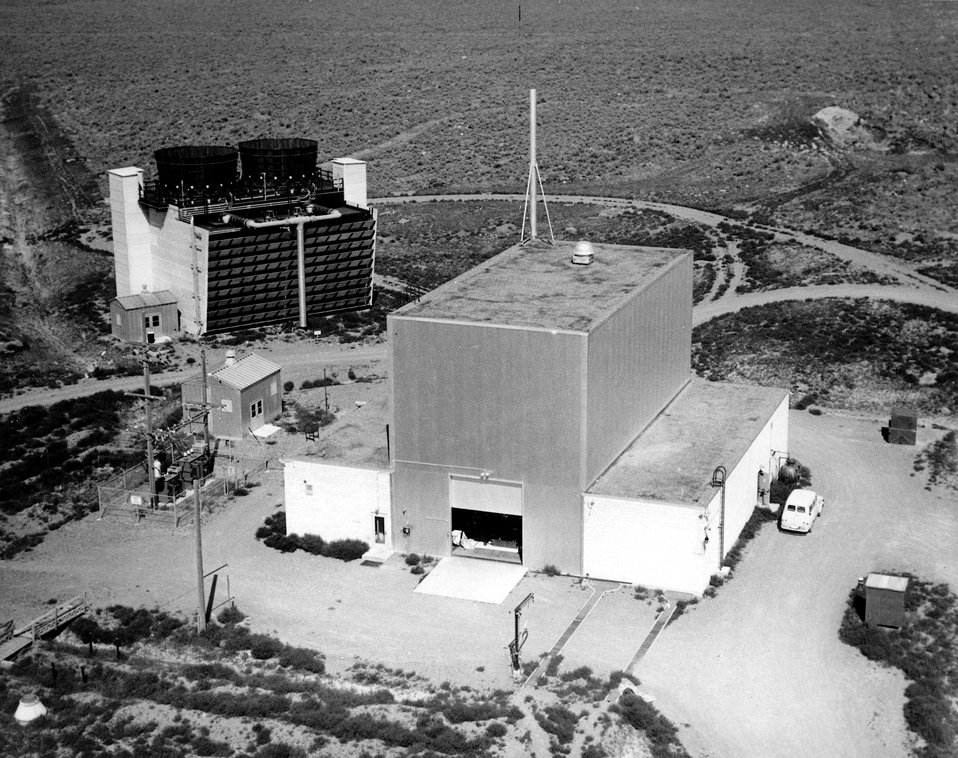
NRTS, Idaho... Aerial view of the Power Burst Facility (PBF) building and cooling tower. Circa 1974.